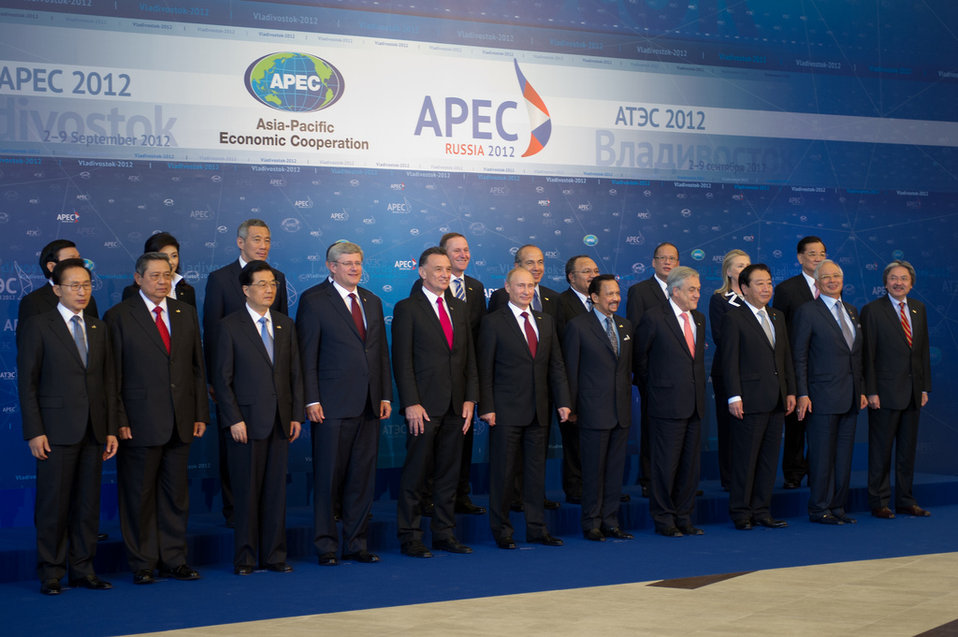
Secretary Clinton Poses for the APEC Leaders' Group Photo

U.S. Secretary of State Hillary Rodham Clinton poses with the Asia-Pacific Economic Cooperation (APEC) Leaders for a group photo in Vladivostok, Russia, September 9, 2012.